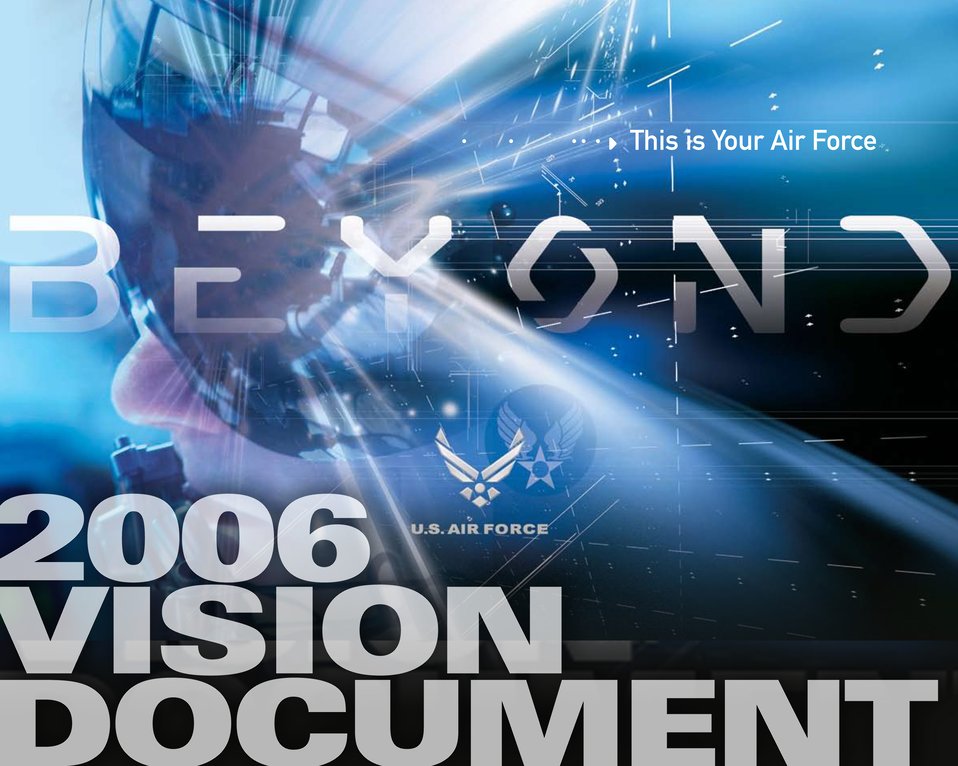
2006 Vision Document